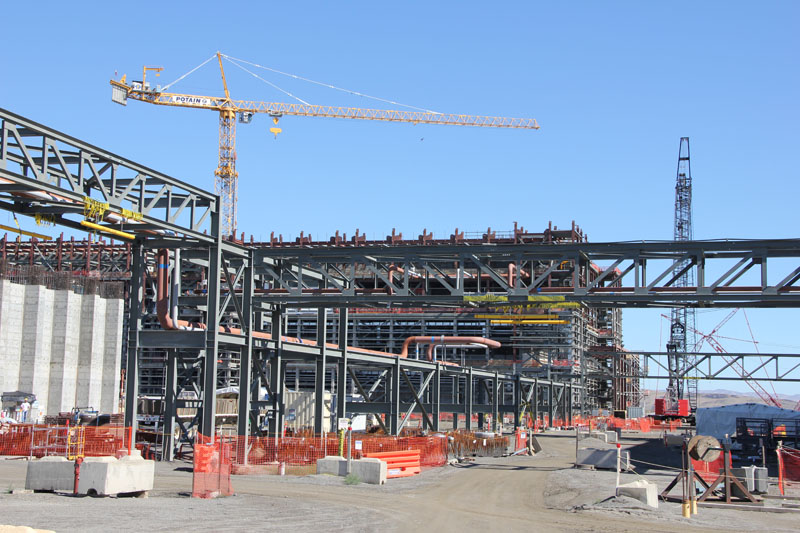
Piperacks are installed between the High-Level Waste and Low-Activity Waste facilities